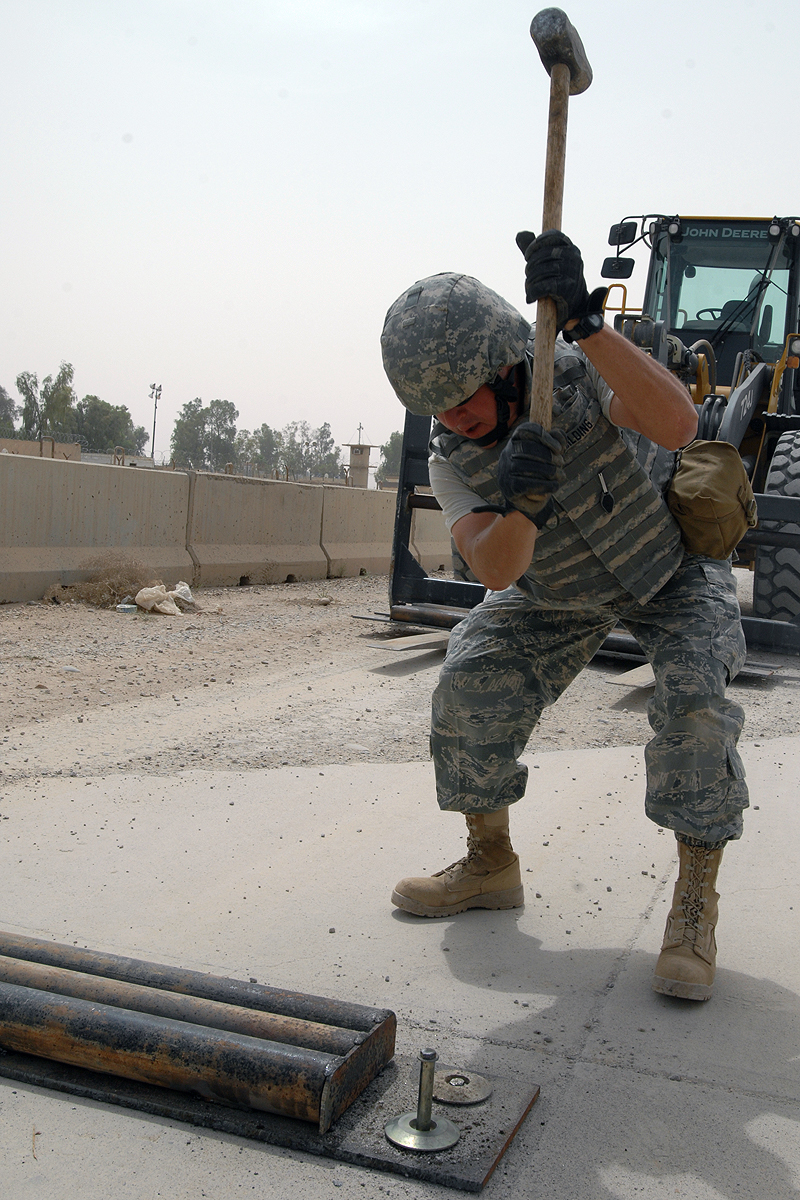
Airmen overcome bumps in road

Tech. Sgt. Mark Gilding installs new speed bumps May 22 at Kirkuk Air Base, Iraq. The speed bumps are meant to not only control speed mitigation but also increase the safety of the security-forces Airmen manning the gates and protect more than 6,000 servicemembers deployed here. Sergeant Gilding is the 506th Expeditionary Civil Engineer Squadron heavy equipment NCO in charge. He is a native of Colorado Springs, Colo., deployed from Peterson Air Force Base, Colo.